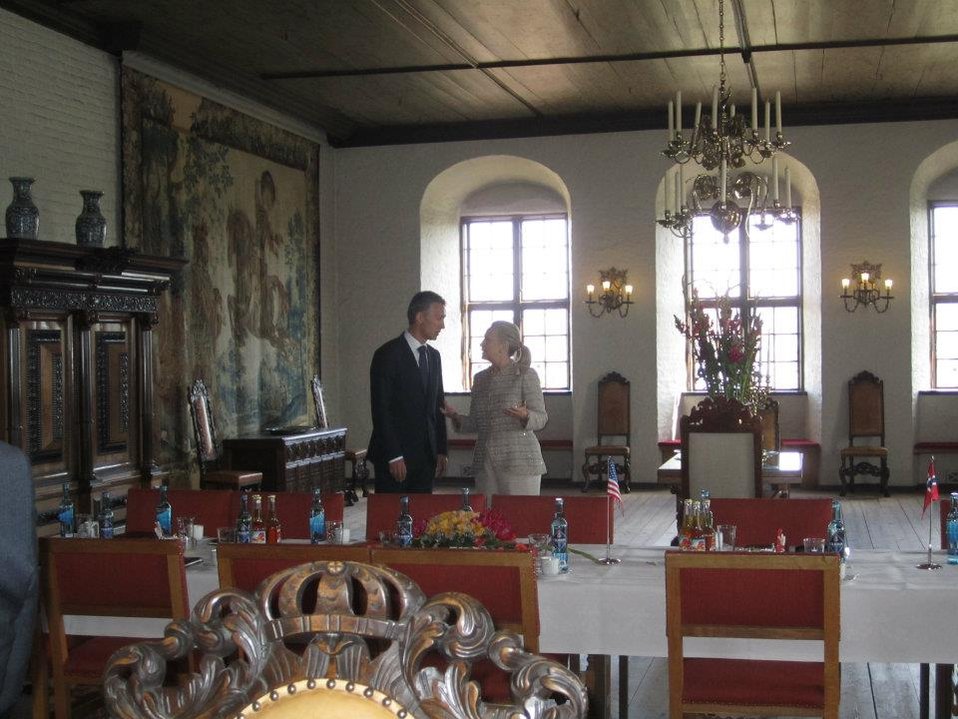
Secretary Clinton and Norwegian Prime Minister Stoltenberg Catch Up

U.S. Secretary of State Hillary Rodham Clinton and Norwegian Prime Minister Jens Stoltenberg catch up before lunch in the Chrisian IV Room at the Akershus Castlein Oslo, Norway, on June 1, 2012.